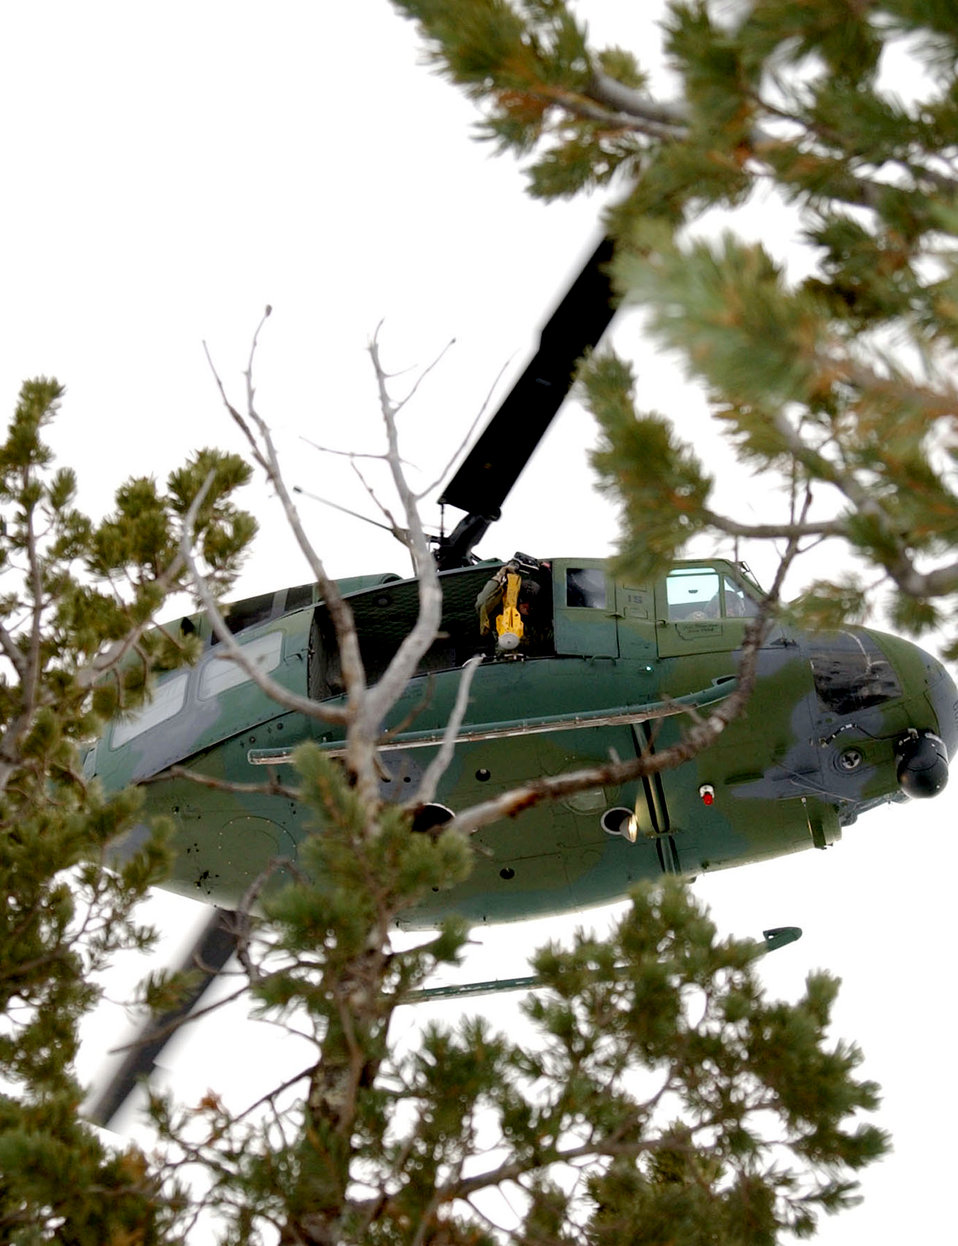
Malmstrom hiker rescue

Staff Sgt. Michael Frances lowers a yellow forest penetrator like the one used to rescue an injured hiker Juy 2, 2010, near Missoula, Mont. Sergeant Frances is a flight engineer from the 40th Helicopter Squadron.